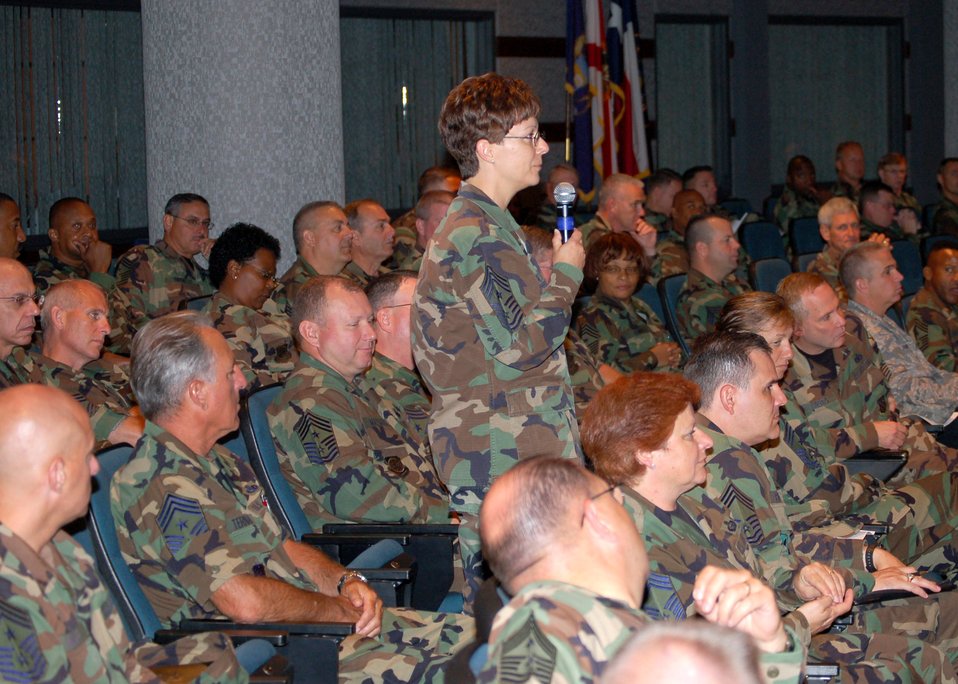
Enlisted leaders gain from summit outcome

Chief Master Sgt. Judy Ruiz poses a question July 26 to the Chief Master Sergeant of the Air Force Panel at the Air Force Senior NCO Academy during the Senior Leader Summit at Maxwell Air Force Base's Gunter Annex; Ala. Chief Ruiz is the command chief for the 377th Air Base Wing at Kirtland AFB, N.M.